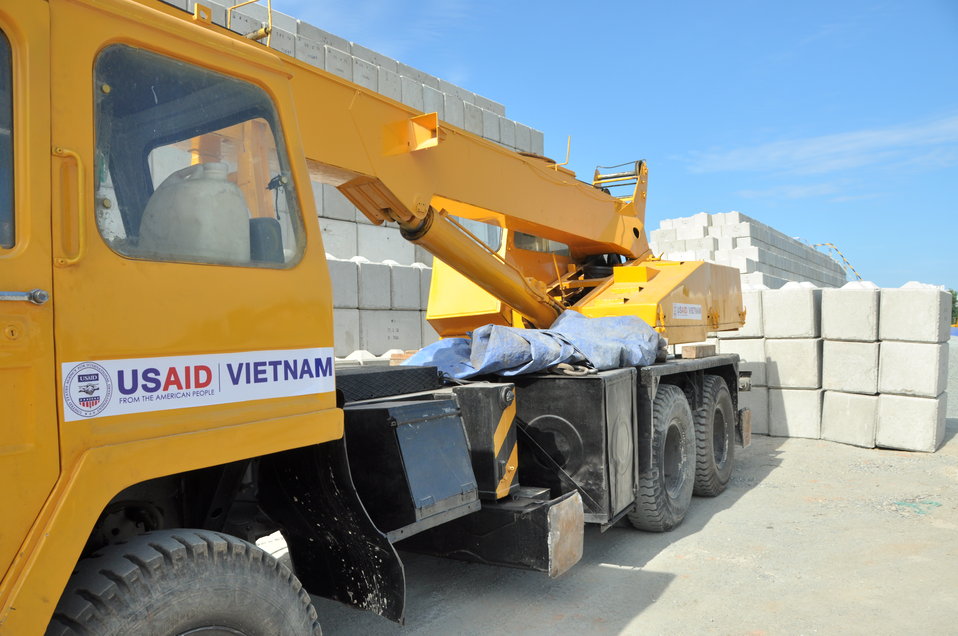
Site construction at the Environmental Remediation of Dioxin Contamination at Danang Airport

Progress at the Danang Airport remediation site
April 23, 2013